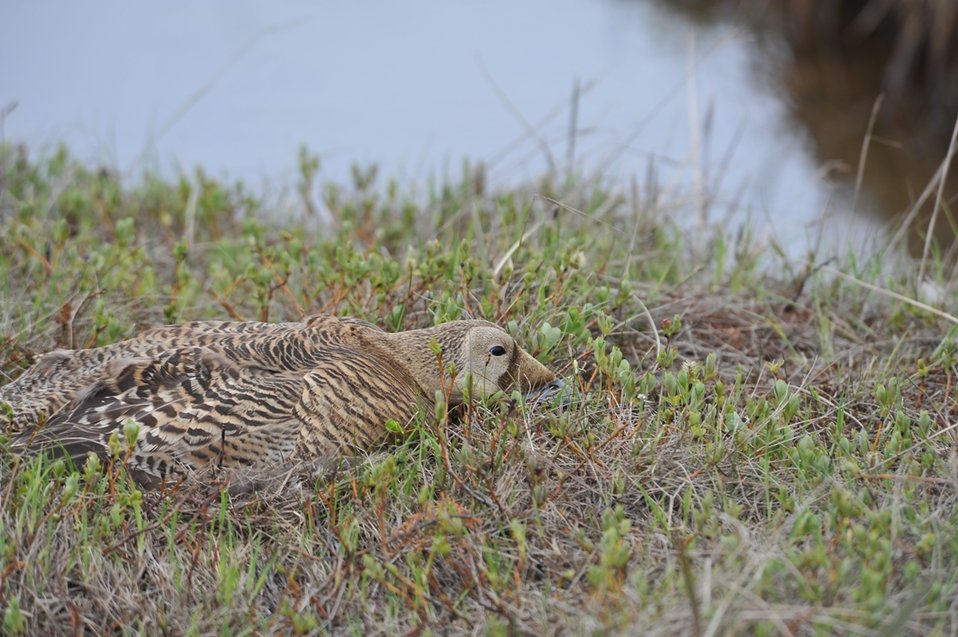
Spectacled Eider Incubating

This spectacled eider female is incubating her eggs. They can be hard to spot when they are sitting so tight on their nest. They blend in very well with their surroundings.

USFWS Yukon Delta NWR